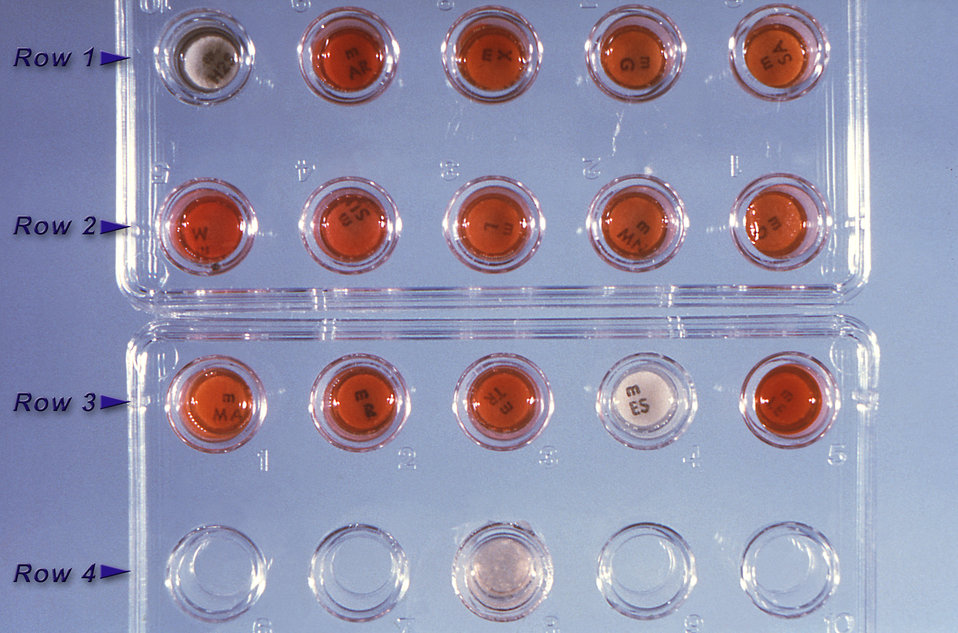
Photographed from above, this image depicts a Minitek� (BD Biosciences) anaerobe identification kit, used to identify specific bacterial species based on their microchemical behavior. All the wells except for the four empty wells in row four had been inoculated with Gram-negative Fusobacterium nucleatum bacteria. In this case, this test was conducted in order to determine the post-reaction presence of indole.